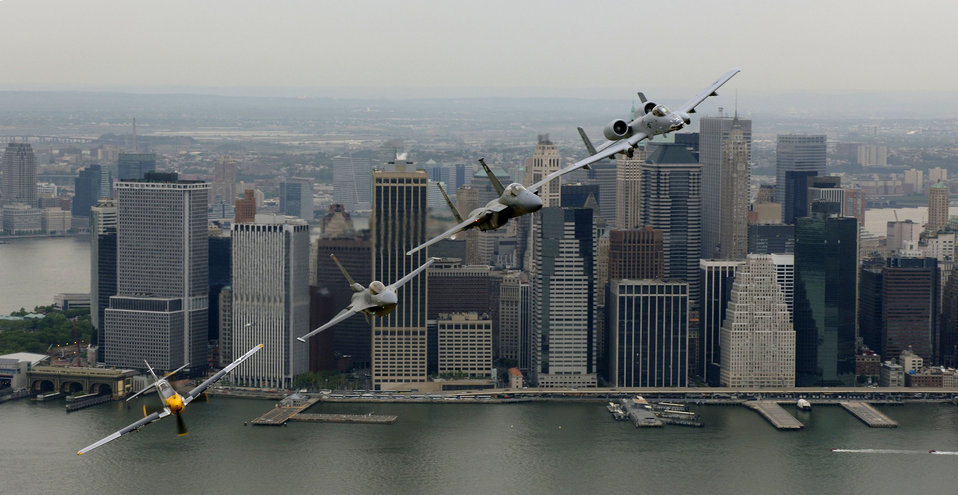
Heritage Flight over New York

A P-51 Mustang, flown by Jim Beasley; an F-16 Fighting Falcon, flown by Maj. Dax Cornelius from Hill Air Force Base, Utah; an F-15 Eagle, flown by Capt. Tony Bierenkoven from Eglin AFB, Fla.; and an A-10 Thunderbolt II, flown by Capt. Jeff Yost of Pope AFB, N.C., fly over New York City on Thursday, May 25, 2006. The